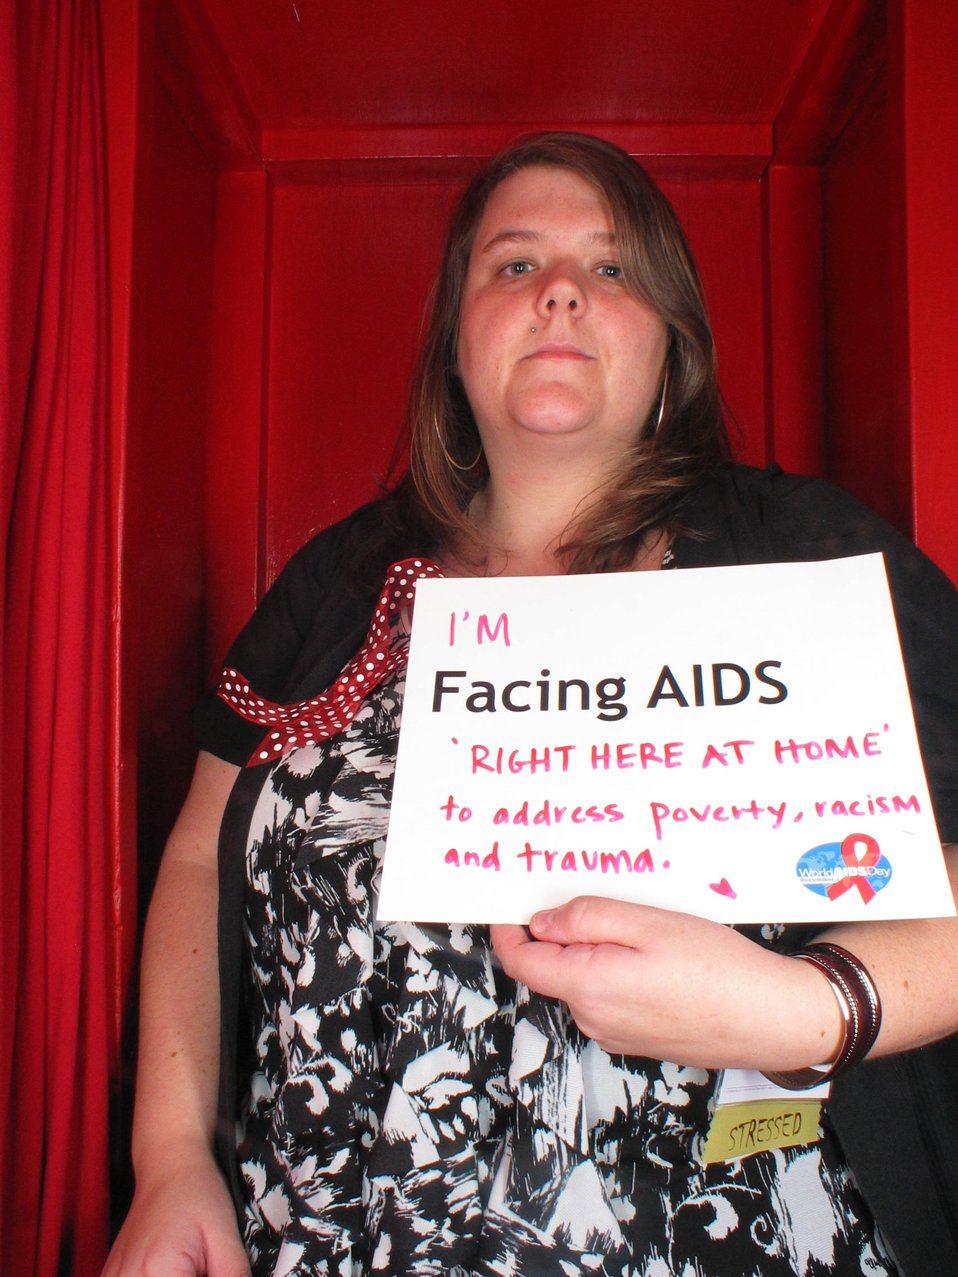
I'm Facing AIDS right here at home to address poverty, racism and trauma.